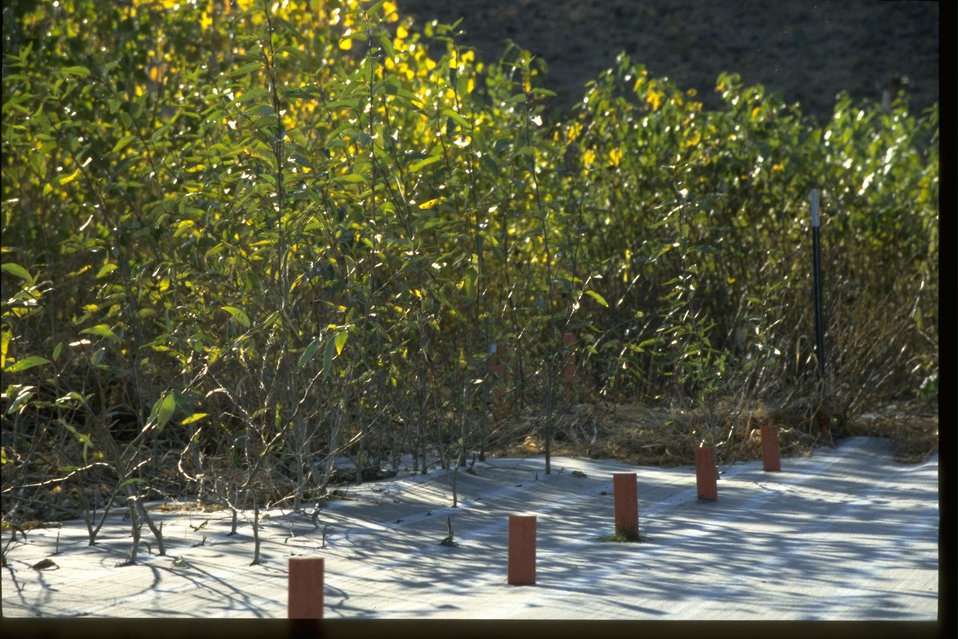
Cottonwood plantation near Clarno Road. Ground cloth under trees.